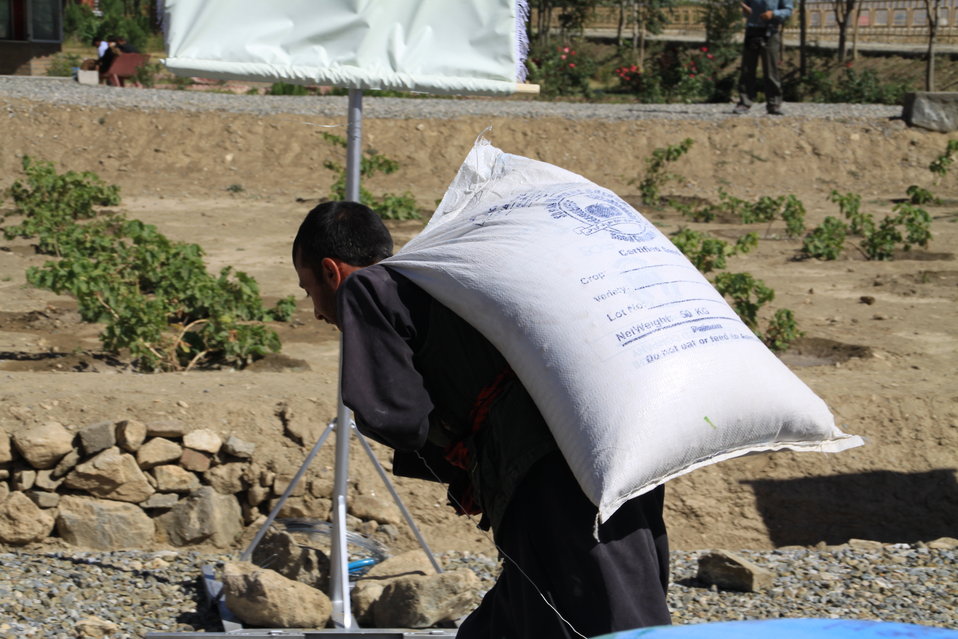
AVIPA Plus Wheat Seed Distribution 101005

US Ambassador Karl Eikenberry and USAID Acting Mission Director Kevin Brownawell joined the Minister of Agriculture, Irrigation and Livestock, H.E. Minister Mohammed Rahimi in signing a Memorandum of Understanding and distributing vouchers to area farmers for wheat and fertilizer.

US Ambassador Karl Eikenberry and USAID Acting Mission Director Kevin Brownawell joined the Minister of Agriculture, Irrigation and Livestock, H.E. Minister Mohammed Rahimi in signing a Memorandum of Understanding and distributing vouchers to area farmers for wheat and fertilizer.

US Ambassador Karl Eikenberry and USAID Acting Mission Director Kevin Brownawell joined the Minister of Agriculture, Irrigation and Livestock, H.E. Minister Mohammed Rahimi in signing a Memorandum of Understanding and distributing vouchers to area farmers for wheat and fertilizer.